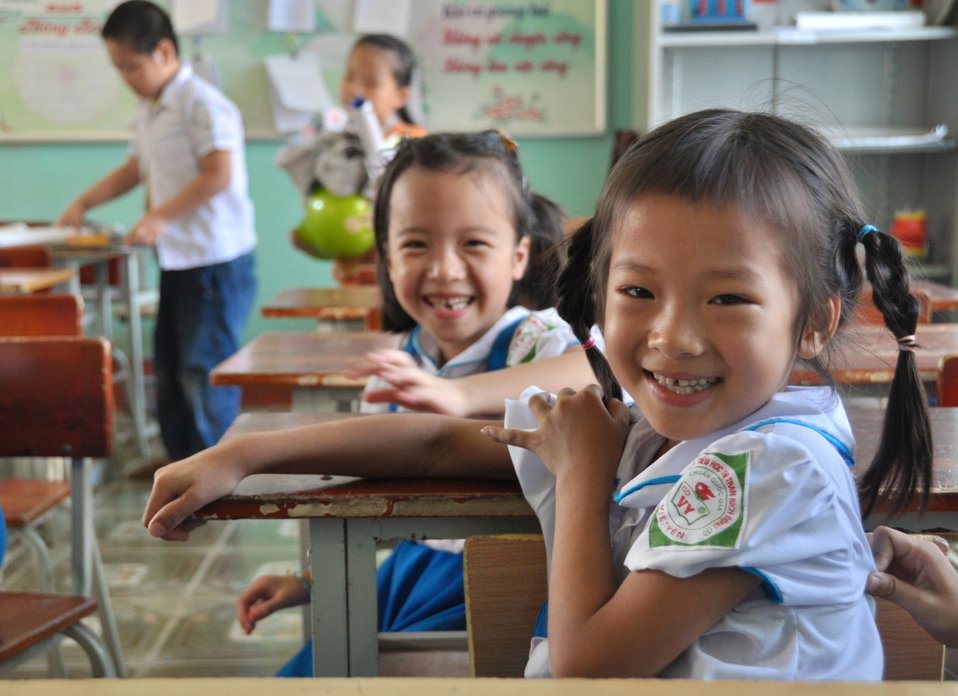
USAID supports deworming education and medication distribution in Bac Giang Province

May 20, 2013